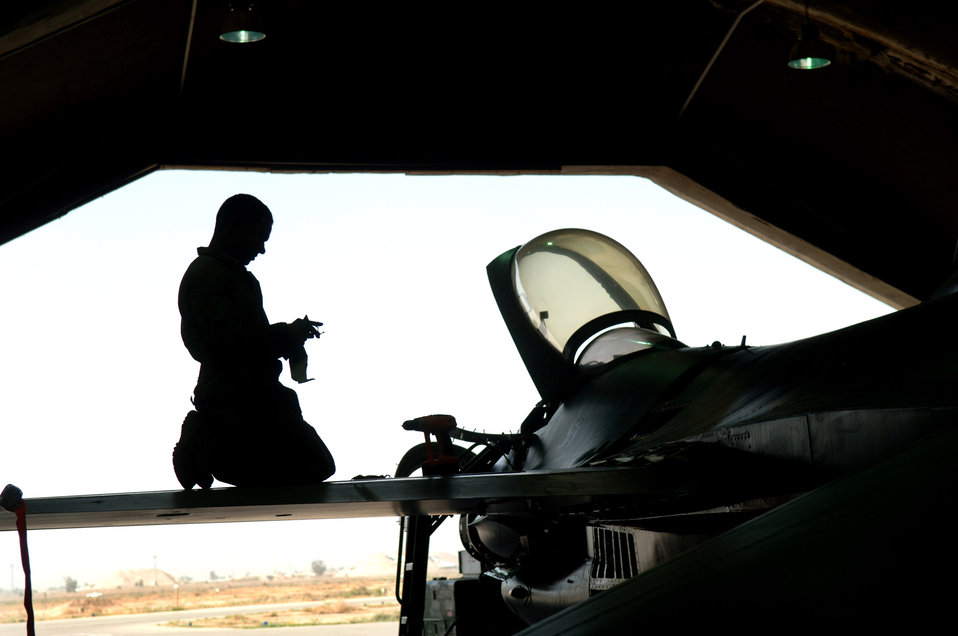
Phase team keeps F-16s in the fight

Senior Airman Gil Alicea removes panels from the left wing of an F-16 Fighting Falcon during a phase dock inspection April 16 at Balad Air Base, Iraq. Maintainers inspect all internal parts of the F-16 every 400 flying hours to keep the aircraft mission-ready. Airman Alicea is an F-16 crew chief with the 332nd Expeditionary Maintenance Squadron.